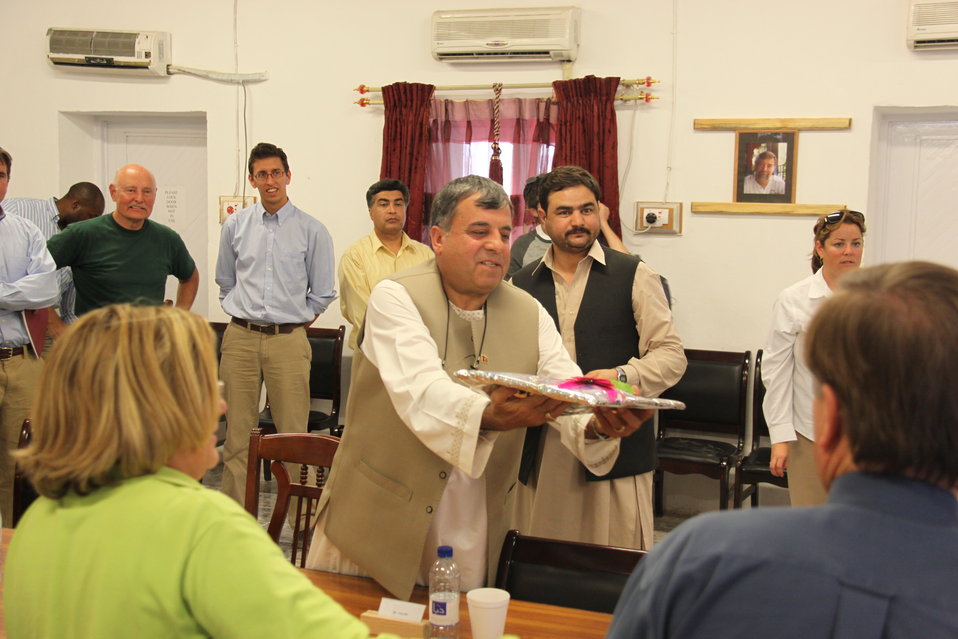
Meeting with Local Leaders in Kandahar